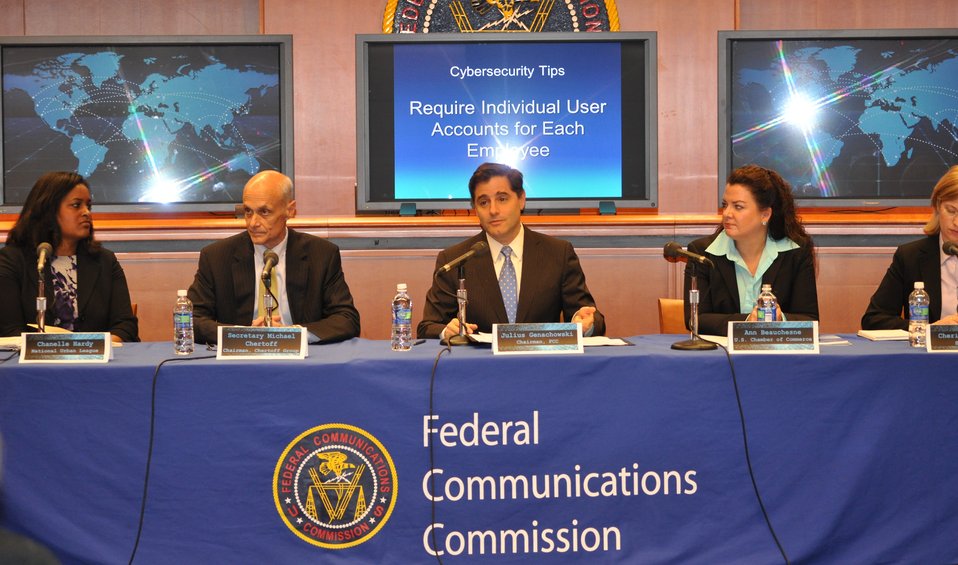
Cybersecurity 5-16

Cybersecurity for Small Business Roundtable; May 16, 2011